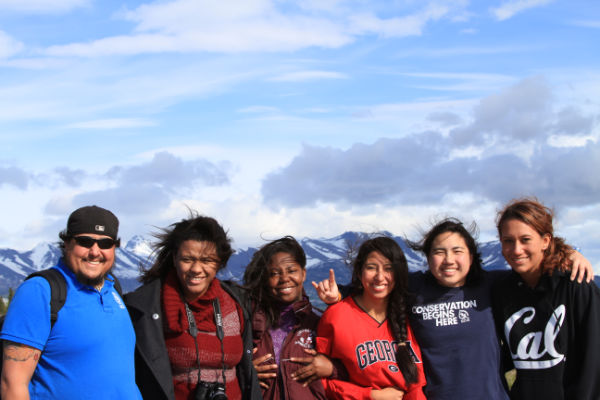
2012-Alaska Region-Work(11)

Alaska Career Discovery Internship Program is partnership with the Student Conservation Association to provide a 12 week internship to college freshman and sophomores to discover careers with the U.S. Fish and Wildlife Service.

Once in Alaska interns convened in Anchorage to acclimatize to the 'Far North' and receive more training including: bear safety, aviation safety, and more.